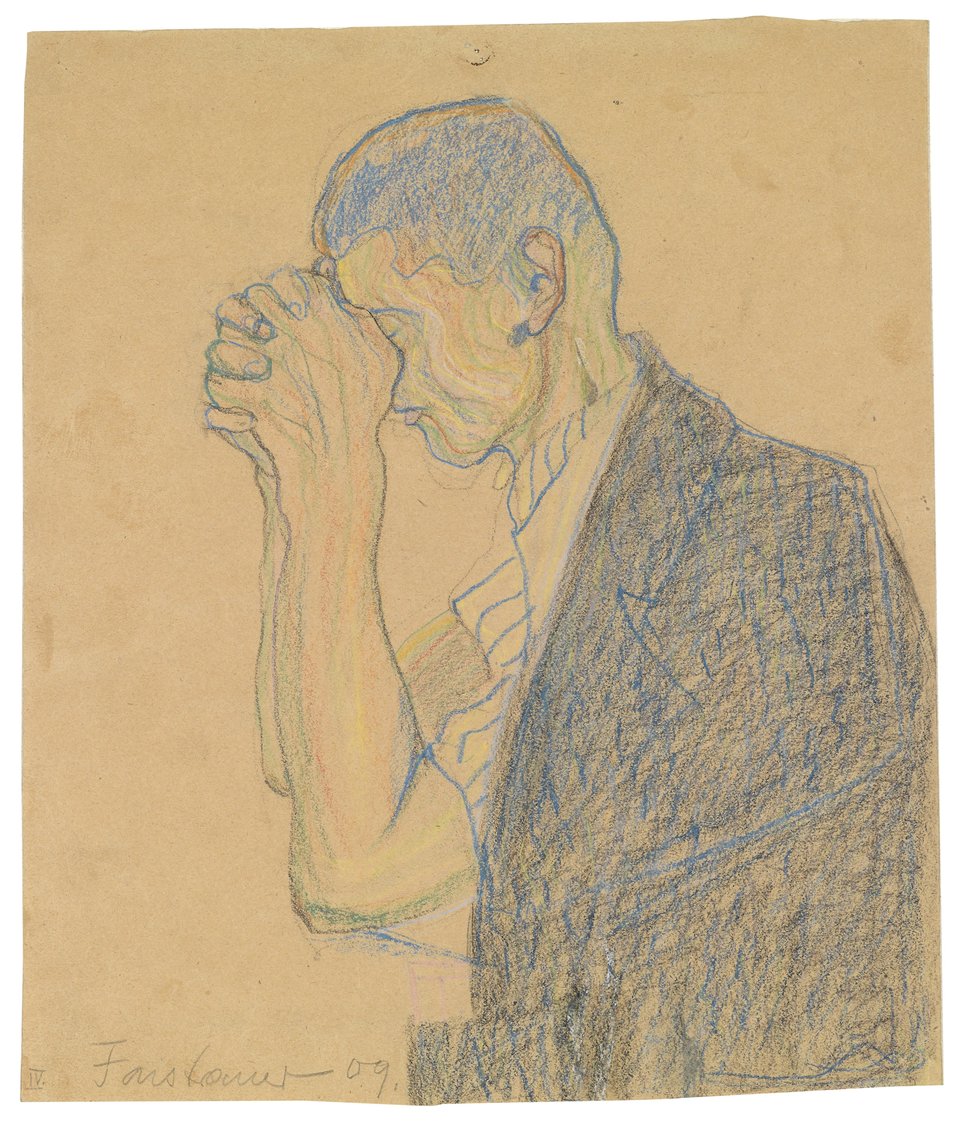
'Studie, betender Mann', monogrammiert und mit Faistauer 09 sowie im linken Eck unten mit IV. bezeichnet, Farbkreide auf Papier, 34,5 x 29 cm